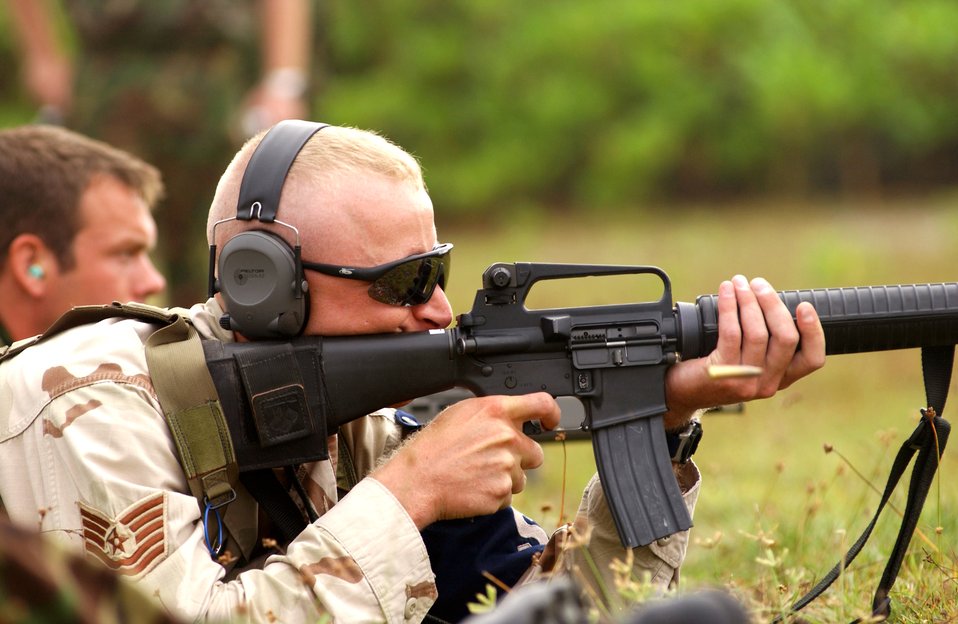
Ready, aim, fire

OPERATION ENDURING FREEDOM -- Tech. Sgt. Greg Goodman, along with members of the British Royal Marine Commandos, participates in a firepower demonstration June 24 at a forward-deployed location. Sergeant Goodman is assigned to the 40th Expeditionary Security Forces Flight and is from the North Dakota Air National Guard.